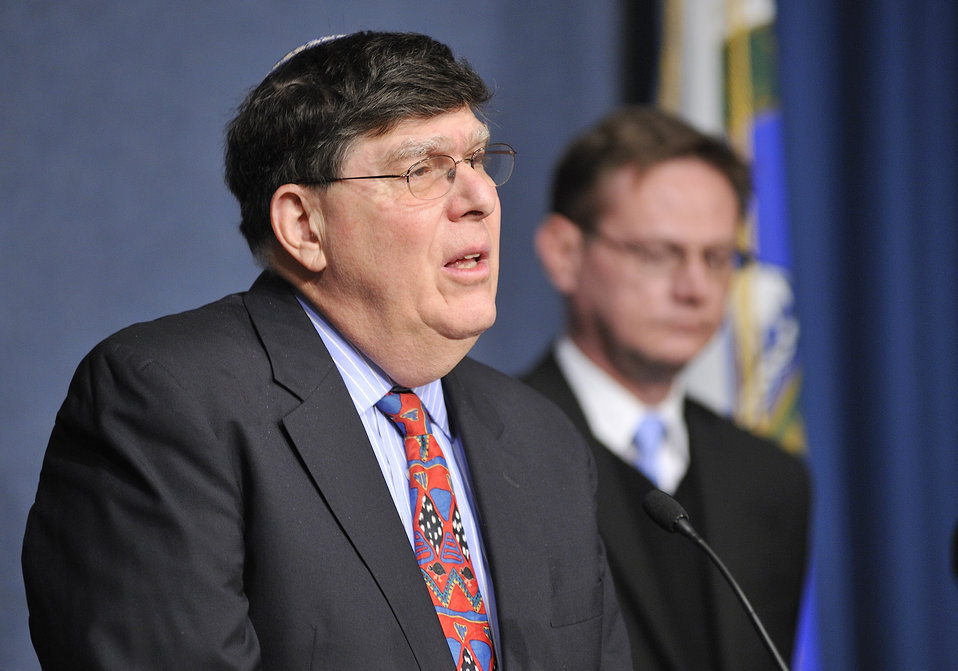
Martin Luther King Jr. Day Celebration at DOE headquarters.